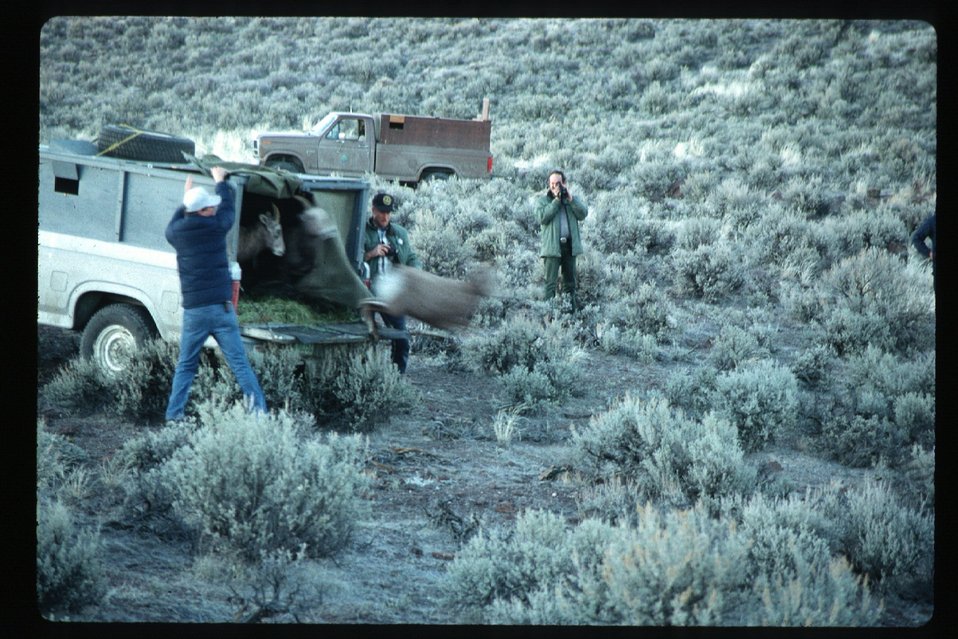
Bighorn Sheep release Wildlife LSRD Lower Snake River District